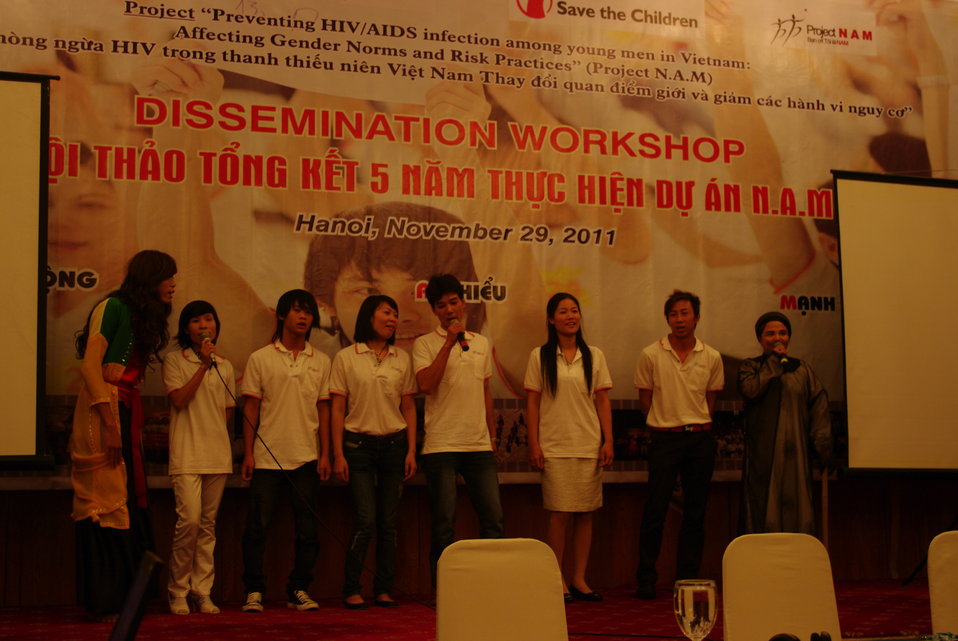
USAID Supports HIV Awareness among Street Youth and Young Men

Trainers and peer educators tell their stories on November 29, 2011, in Hanoi, VietnamTrainers and peer educators tell their stories on November 29, 2011, in Hanoi, Vietnam